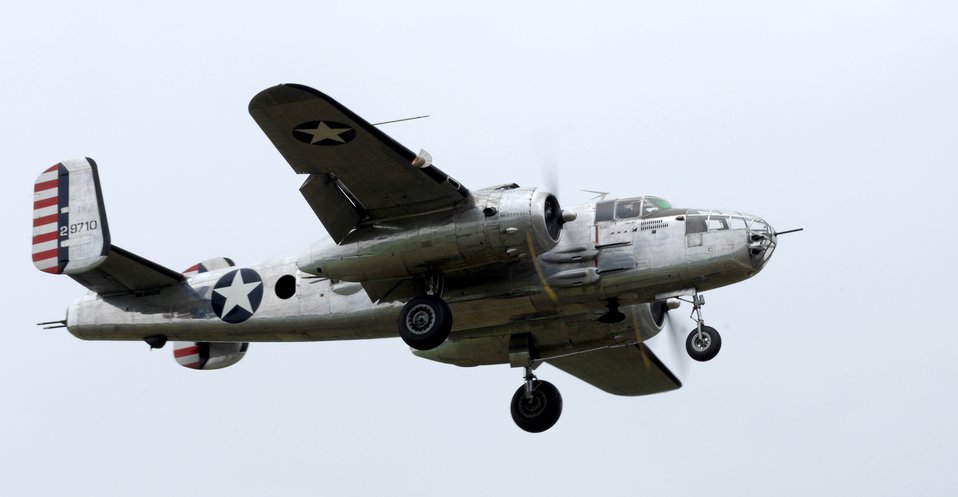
Doolittle Raiders 65th anniversary kicks off

A B-25 Mitchell bomber approaches the runway April 17 at Randolph Air Force Base, Texas. The plane flew into the base to help celebrate the Doolittle reunion taking place there to mark the 65th anniversary of the Doolittle raid.